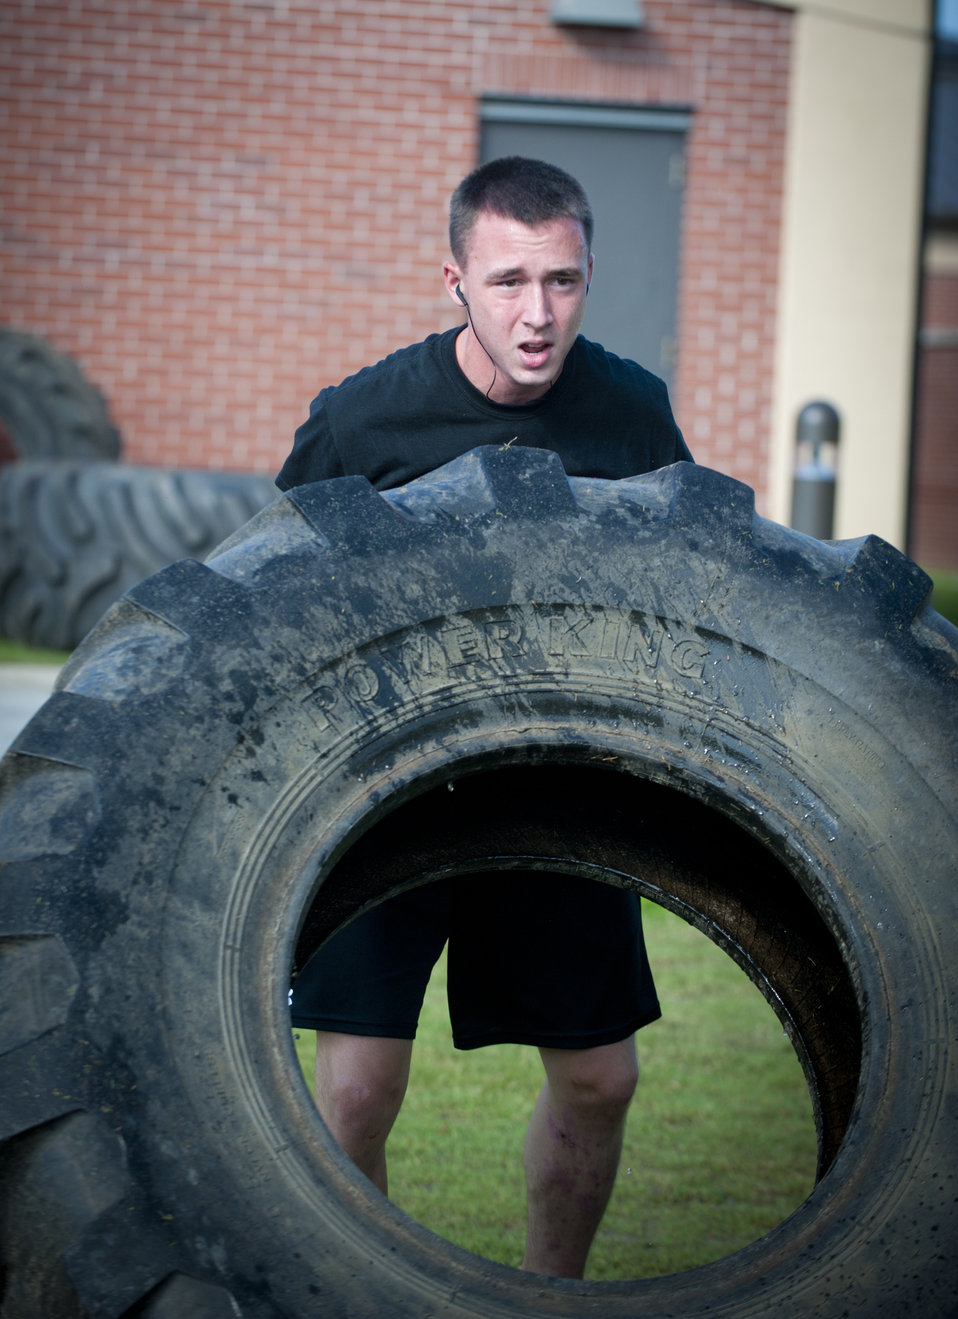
Push-over

Airman 1st Class Adam Orton flips a tire during a workout at Moody Air Force Base, Ga., Aug. 9, 2012. Orton participated in the 2012 Spartan Death Race, which is held annually in Pittsfield, Vt. He plans to compete again next year. Orton is a 74th Aircraft Maintenance Unit aerospace propulsion journeyman.